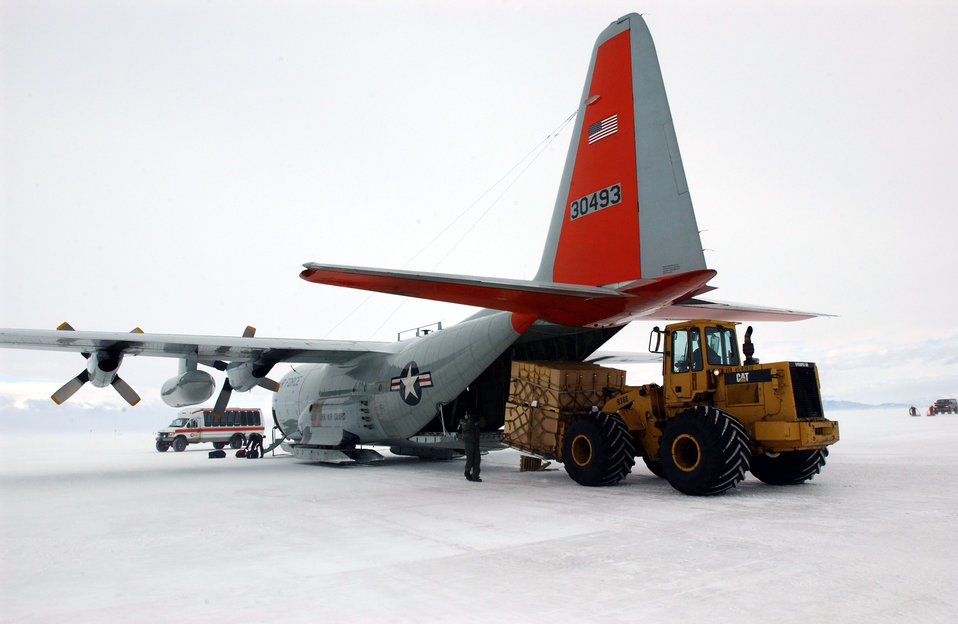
Operation Deep Freeze

WILLIAMS FIELD, Antarctica (AFPN) -- Master Sgt. Elliot McGuigan directs the unloading of cargo from an LC-130H ski plane here in support of Operation Deep Freeze. McGuigan is assigned to the New York Air National Guard's 139th Airlift Wing at Stratton ANG Base.